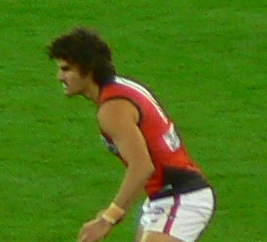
Damien Peverill, Australian rules footballer